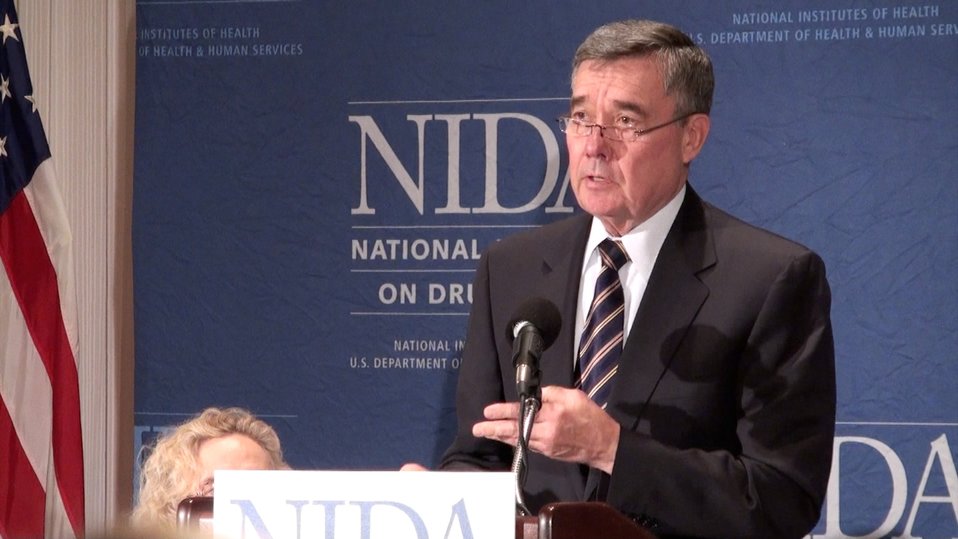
R. Gil Kerlikowske, Director, ONDCP